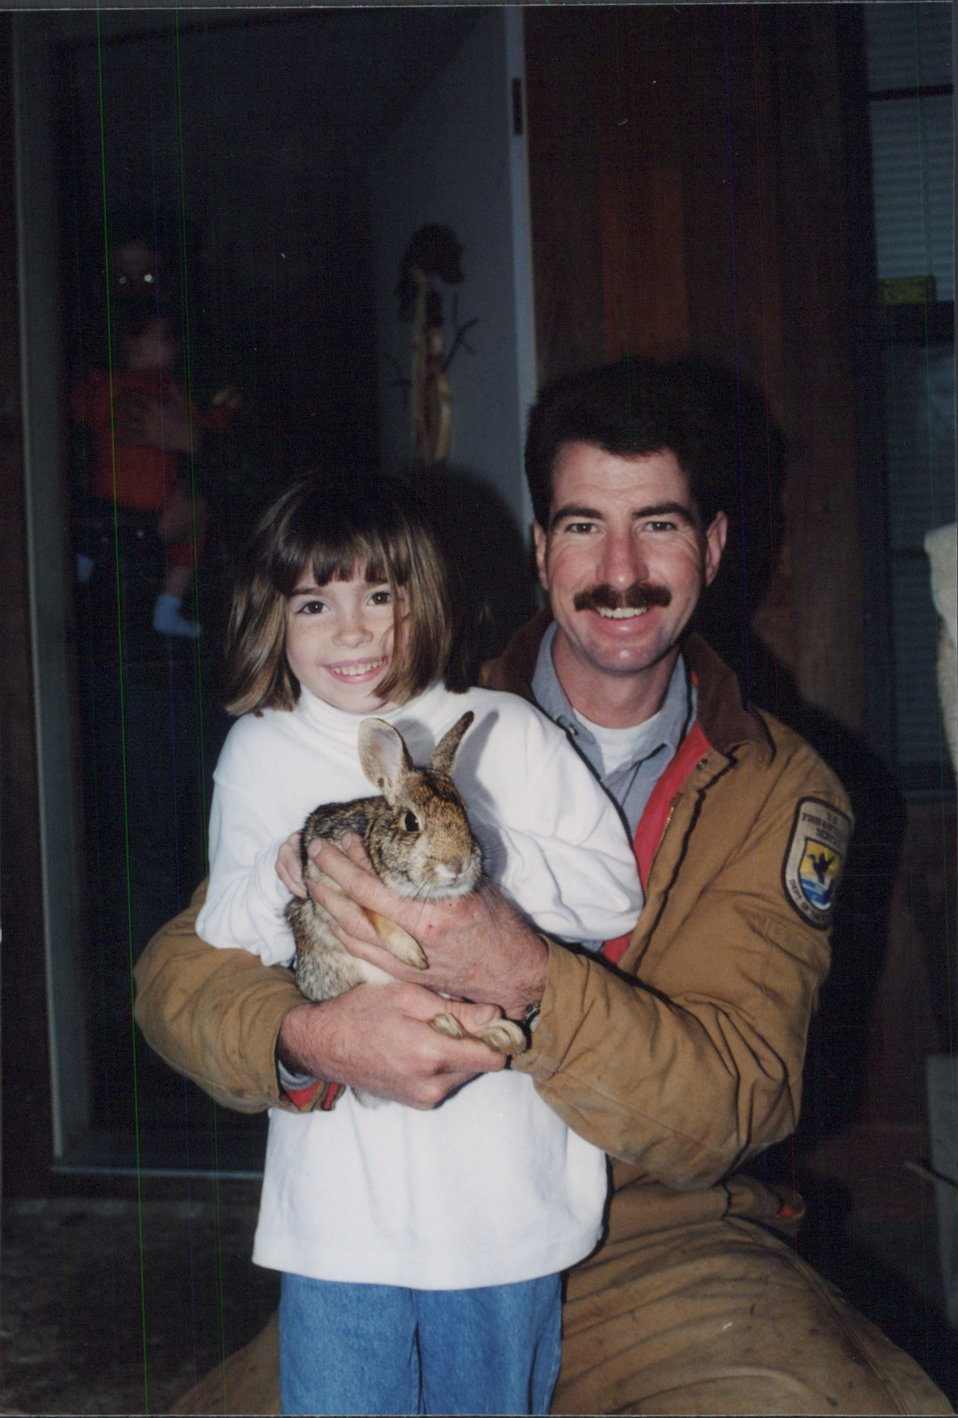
Officer Ray Portwood

National Wildlife Refuge law enforcement officer Ray Portwood taught his daughter Rachel the importance of protecting wildlife from an early age. Rachel is now a SCEP (Student Career Experience Program) intern at Long Lake Refuge in North Dakota.